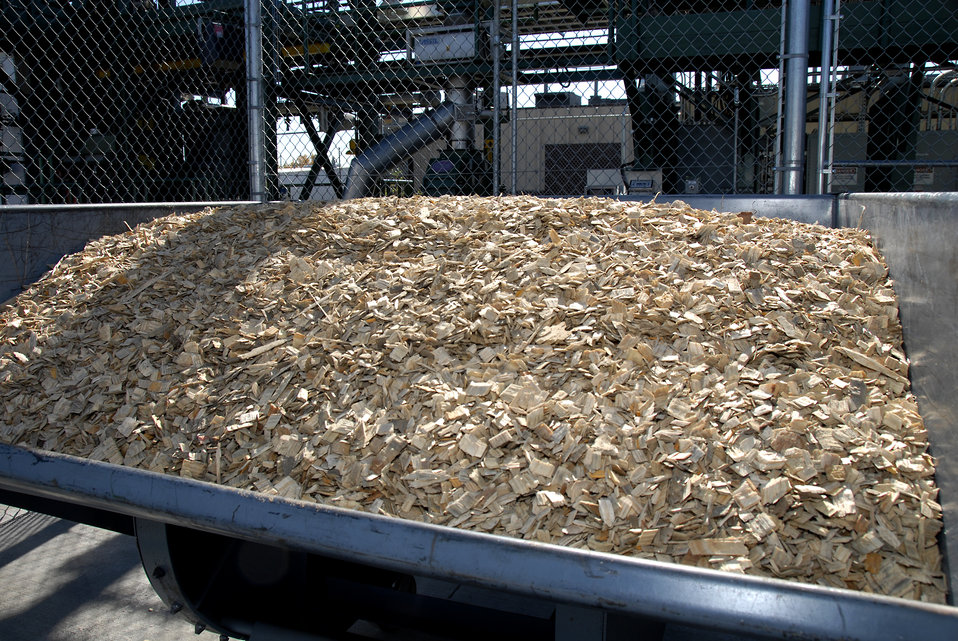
Wood chips are used as a source for cellulosic ethanol production at Range Fuels in Broomfield, Colorado on October 23, 2008. Cellulosic ethanol is a biofuel produced from wood, grasses, or the non-edible parts of plants. Wood chips and other cellulosic materials have several advantages in that they are abundant, they don't compete with food crops such as corn or soybean, and they result in far lower carbon-dioxide emissions.